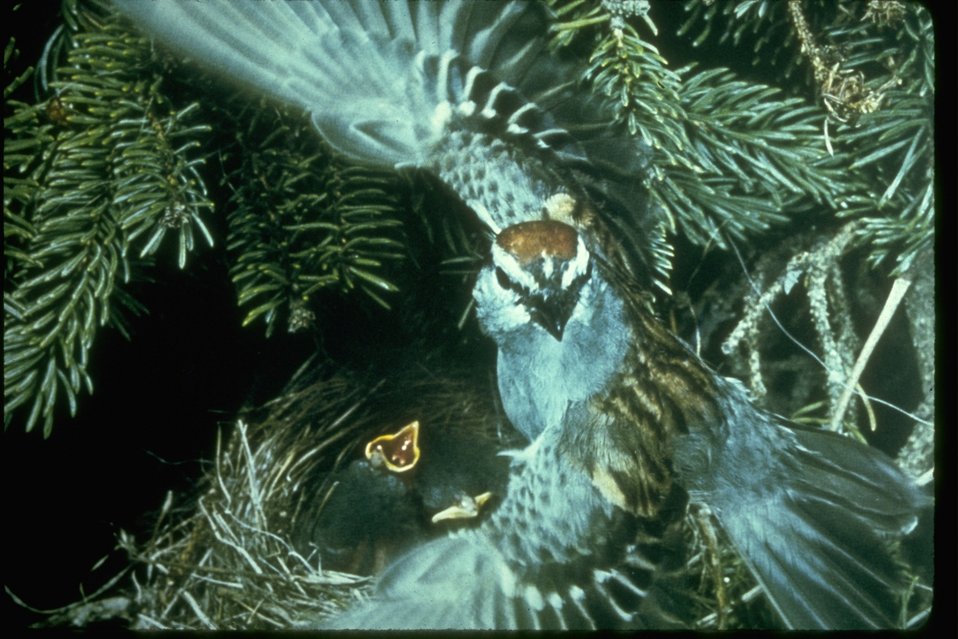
Bird with young in nest.